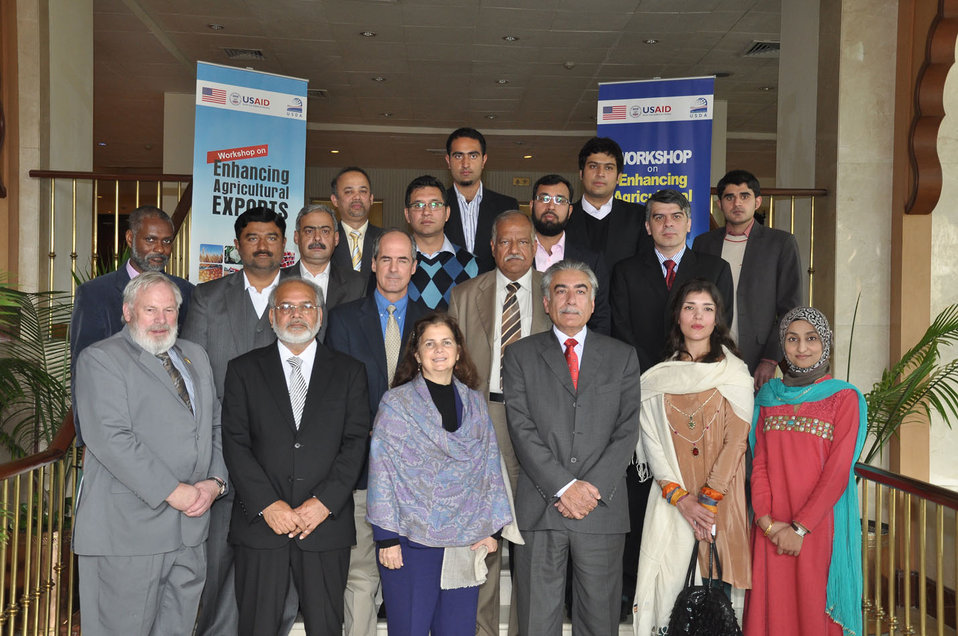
Ms. Nina Fite, U.S. Consul General with distinguished guests, participants and organizers of the workshop at Avari Lahore.